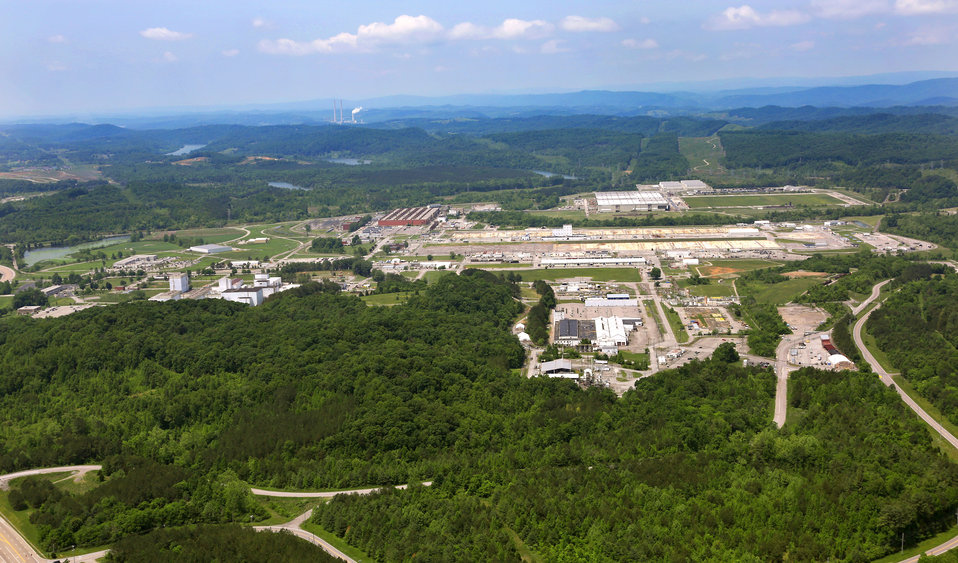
ETTP aerial 2014 Oak Ridge

JRO 0403 ORNL photo Jason Richards 5-20-2014 Oak Ride Tennessee